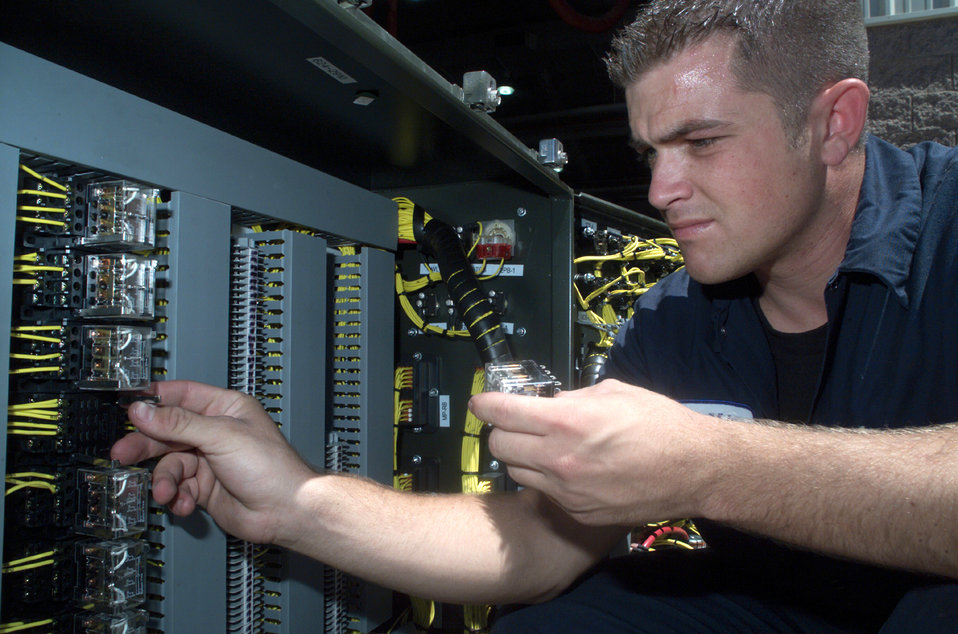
Taking care of business

DAVIS-MONTHAN AIR FORCE BASE, Ariz. -- Senior Airman Christopher Melton replaces an electrical relay in an aircraft cargo loader. He is a vehicle mechanic with the 355th Logistics Readiness Squadron here.